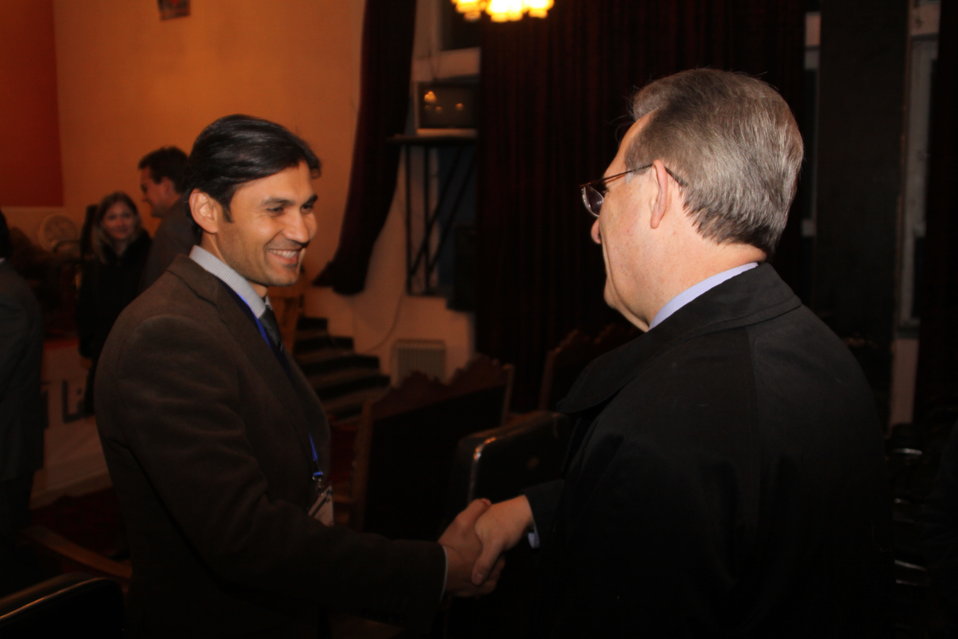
U.S. Ambassador E. Anthony Wayne